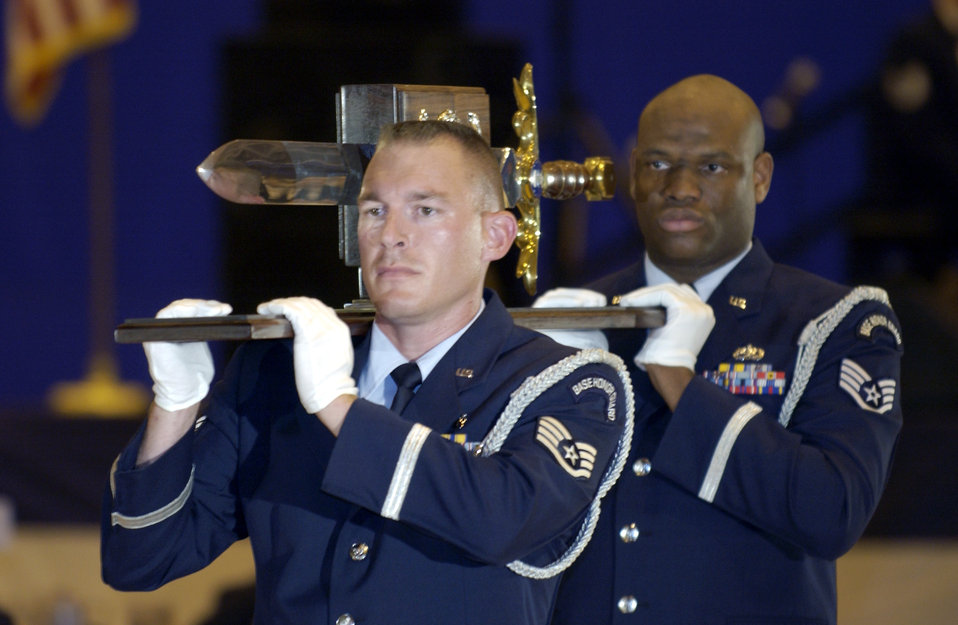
Attention to orders

ANDREWS AIR FORCE BASE, Md. -- Staff Sgts. Daniel Perry (front) and Ray Bradshaw bear the Air Force sword for the Order of the Sword ceremony Sept. 13. Several hundred airmen gathered here to honor and pay tribute to the 20th secretary of the Air Force, Dr. James G. Roche. The Order of the Sword is the highest honor Air Force noncommissioned officers can give to an individual and is patterned after two orders of chivalry founded during the Middle Ages in Europe. Perry is assigned to Wright-Patterson Air Force Base, Ohio, and Bradshaw is assigned to Kadena Air Base, Japan.